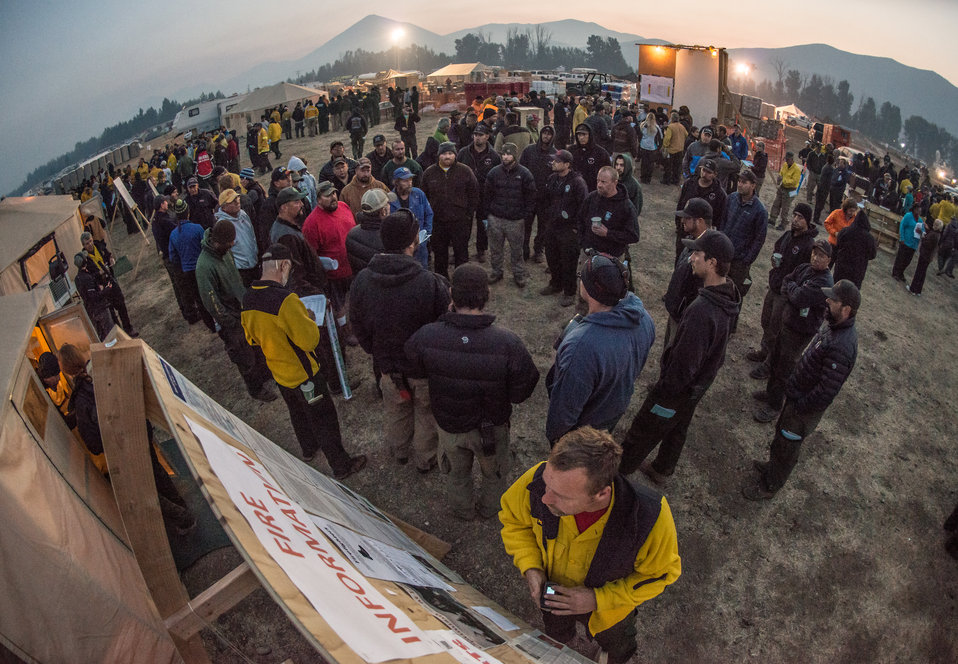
Following the morning briefing, with the sun about to rise over the horizon, Division/Group leaders meet with their key personnel at the Beaver Creek Fire Incident Command Post, before heading, west of Hailey, ID, to continue the fire fighting operations, on Tuesday, Aug 20, 2013.